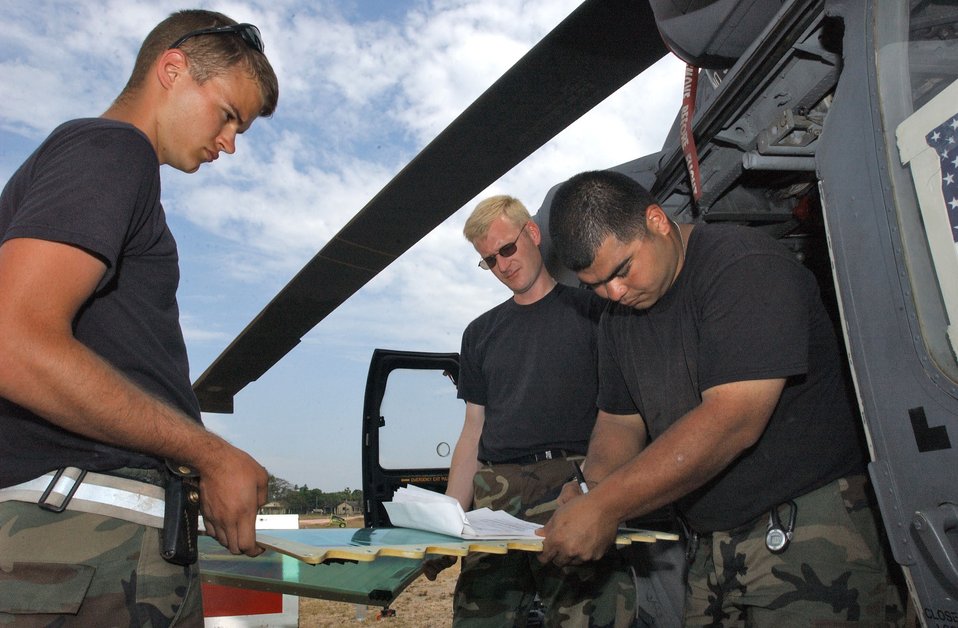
Connecting the dots

KATUNAYAKA AIR BASE, Sri Lanka -- Airman Cory Lee ( from left), Tech. Sgt. Jeremy Landers, and Staff Sgt. Jesse Meno prepare to install a windshield on an HH-60 Pave Hawk helicopter here Jan. 11. The Airmen are deployed here to transport U.S. relief supplies to devastated areas of the country in support of Operation Unified Assistance. They are assigned to the 33rd Expeditionary Rescue Squadron, Kadena Air Base, Japan.